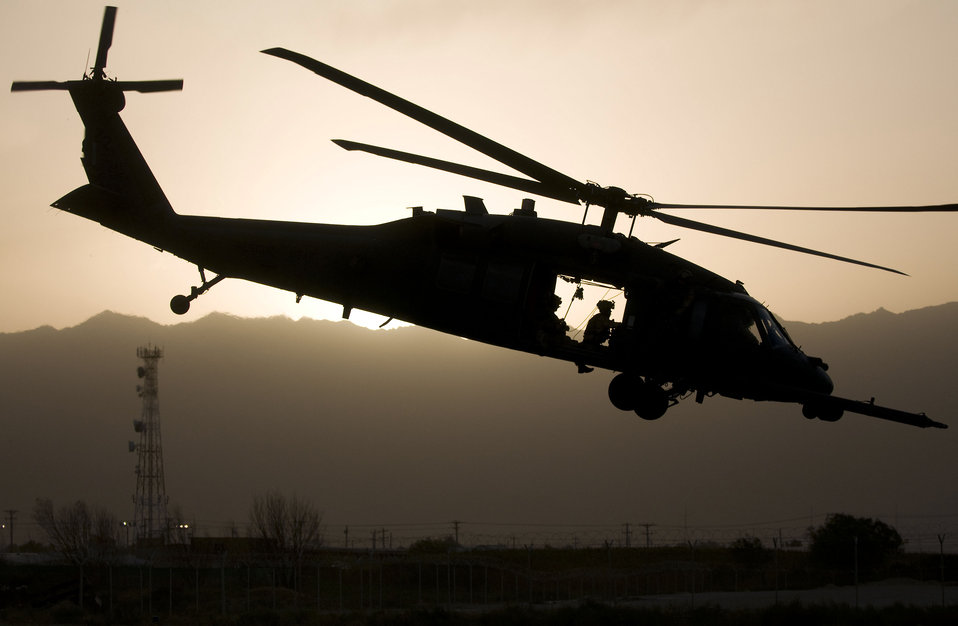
Airman renders combat first aid to Soldiers

An Air Force HH-60G Pave Hawk takes off for a medical evacuation mission as the sun sets over Bagram Airfield, Afghanistan. Although primarily used for combat search and rescue, the HH-60G supplements the Army's UH-60 Black Hawks in medical evacuations during night and marginal weather conditions.